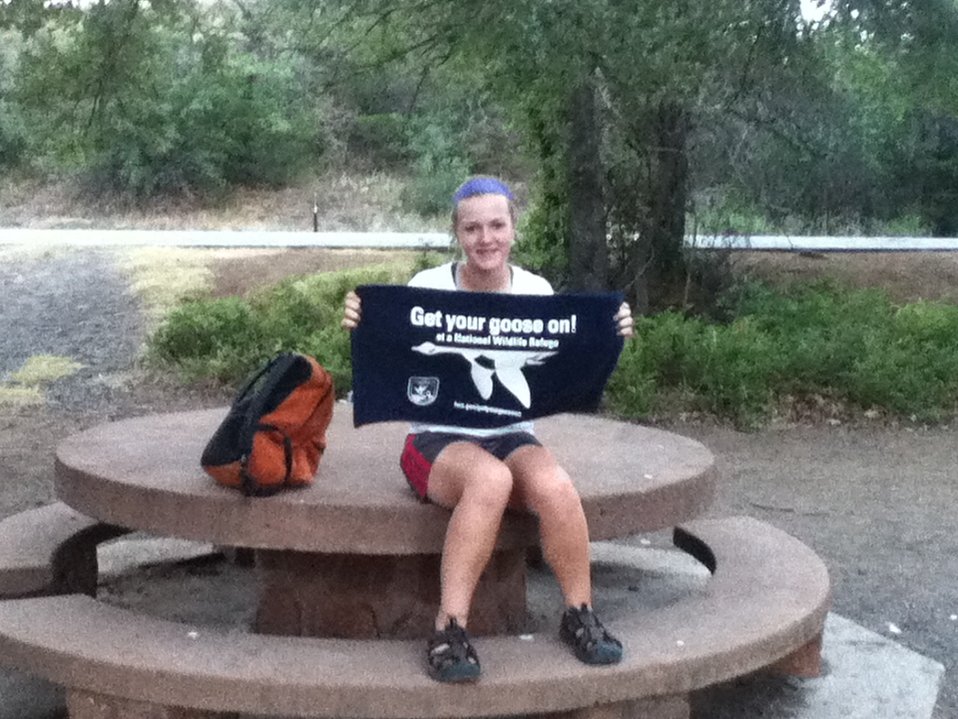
Get Your Goose On!

Wichita Mountains National Wildlife Refuge in Oklahoma.